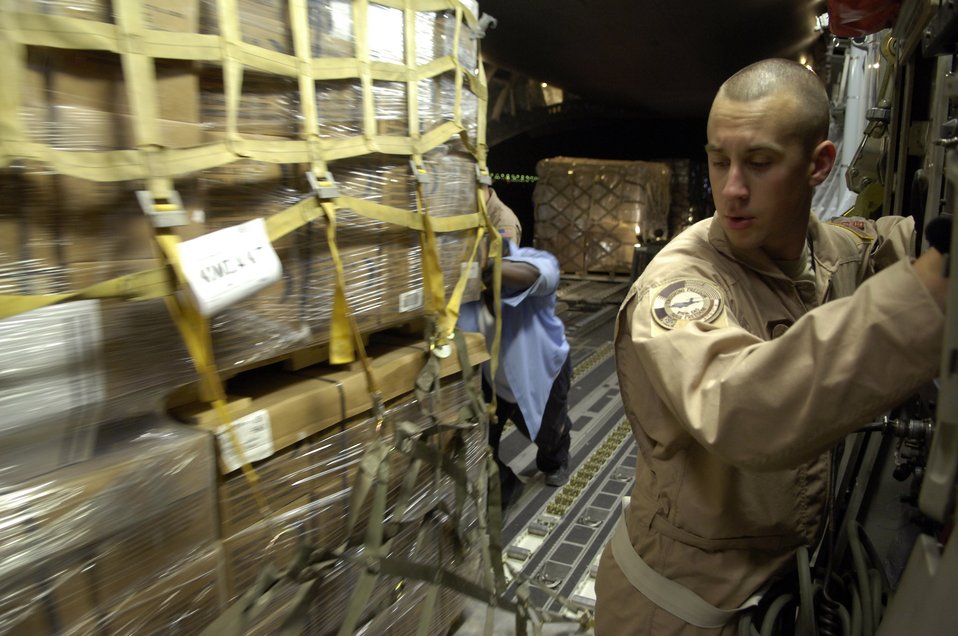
Supplies bound for Cyprus

Senior Airman Donnie McCorkle waits to lock a pallet in place as ground crew personnel in Southwest Asia help load a C-17 Globemaster III on July 22. C-17 Globemaster III crews from the 816th Expeditionary Airlift Squadron are filling their cabins with pallets of supplies such as water, Meals, Ready to Eat and cots for the American citizens leaving Lebanon. This C-17 transported 17 pallets, about 64,000 pounds, of cargo to Cyprus on this mission. Airman McCorkle is a loadmaster with the 816th EAS.